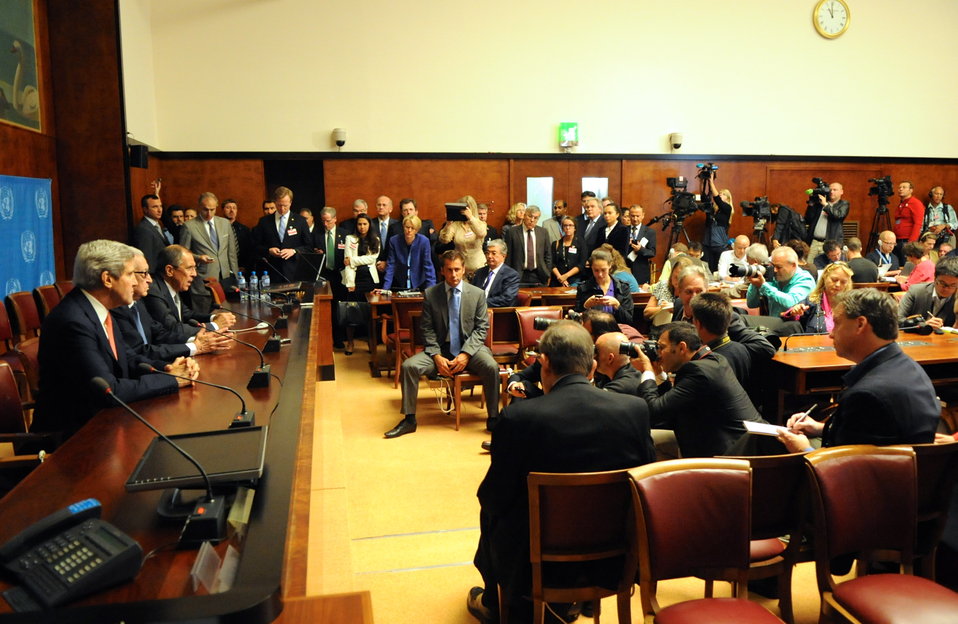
Secretary Kerry Addresses Reporters after UN-Russia Meeting

10:59 a.m., September 13, 2013 - U.S. Secretary of State John Kerry addresses reporters after he, United Nations Special Envoy for Syria Lakhdar Brahimi, and Russian Foreign Minister Sergey Lavrov met at UN headquarters in Geneva to discuss a political solution to the Syrian civil war.